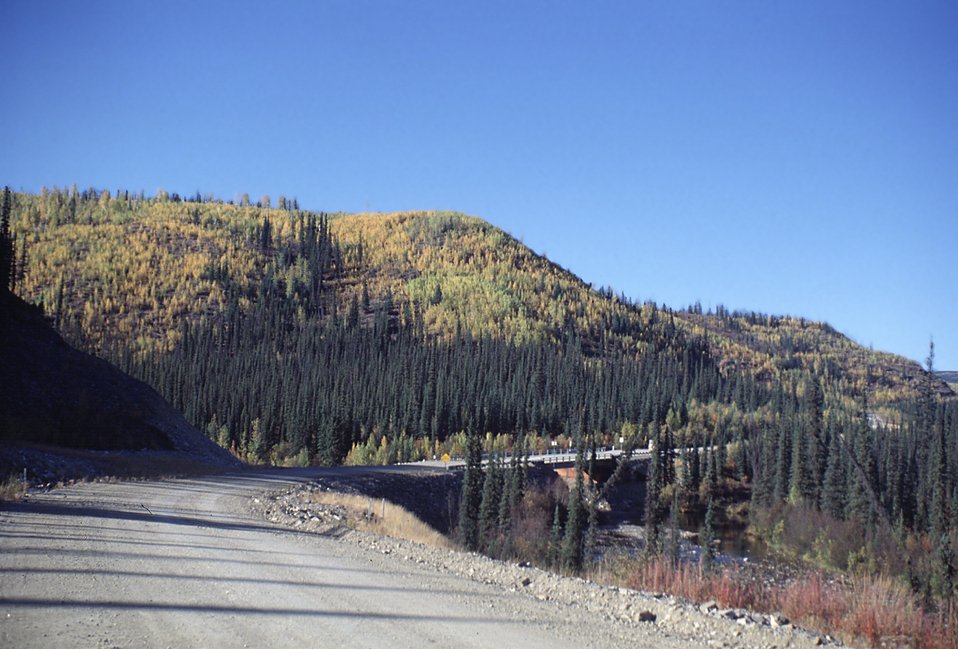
Fall colors along Denali Highway